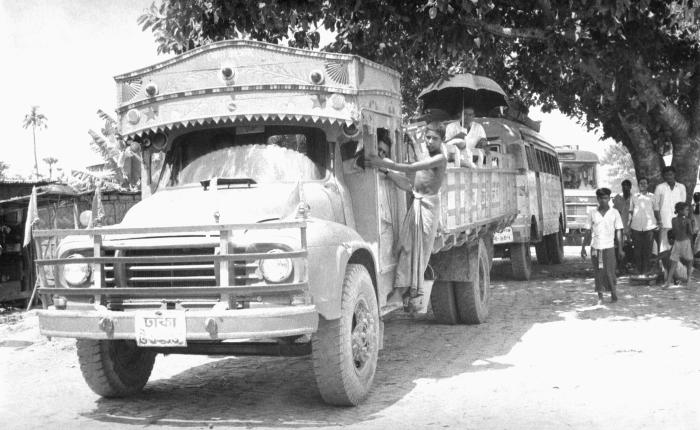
Pictured here, was a typical Bangladesh street scene involving a convoy of buses and trucks transporting both goods, and people from town to town. This image was part of a series provided by Dr. Stan Foster, and captured by Pierre Claquin, M.D., B.A.C., who at the time was a member of the World Health Organization's Smallpox Eradication Program. It was part of a series photographed by former E.I.S. officer, Stanley O. Foster M.D., M.P.H., and was one of a series entitled 'The Story of One Smallpox Jeep', which depicted the travails faced by the jeep, and its occupants of public health practitioners, as they road through the Bangladesh countryside in an attempt to eradicate smallpox from the country.